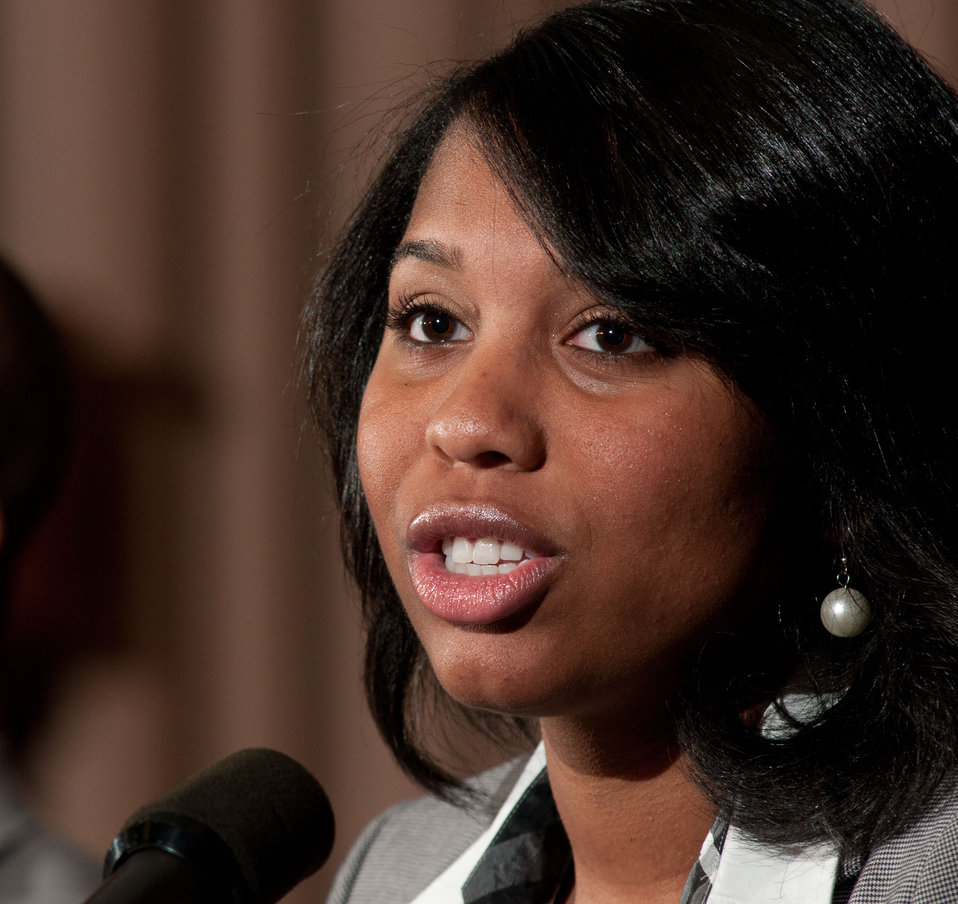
United States Department of Agriculture (USDA) Food Safety and Inspection Service Meditation and Life/Work Services Division Program Support Assistant Madison Carter, participated in the panel discussion during the Work Force Recruitment Program’s (WRP) “Your Key To Hiring Student Interns and Employees with Disabilities” event hosted by the United States Department of Agriculture (USDA) and held in the Jefferson Auditorium, in Washington, D.C. on Tuesday, February 7, 2012.